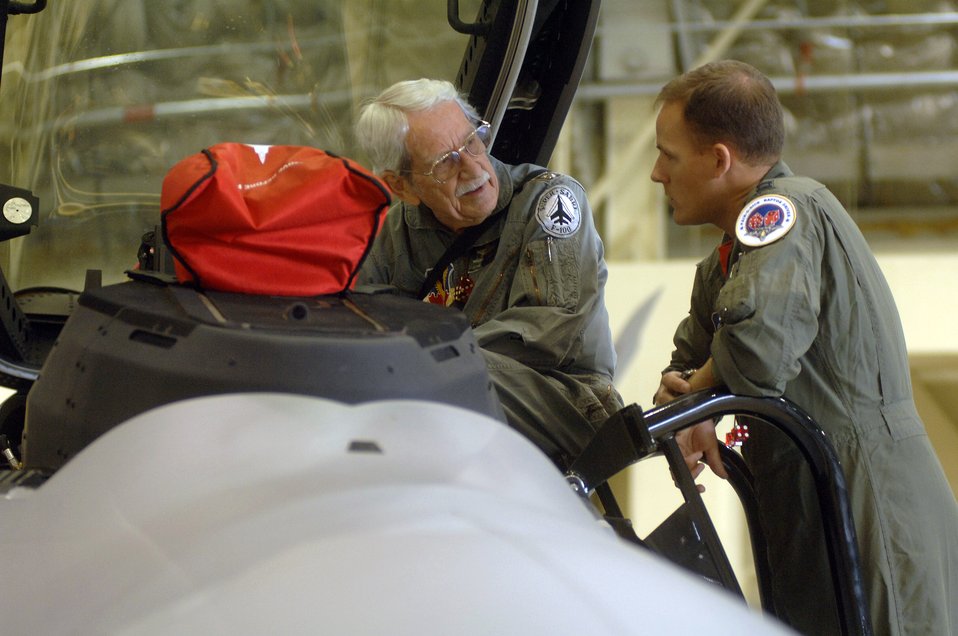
Air Force fighter squadron celebrates 90th

Capt. Brad Spears talks to retired Lt. Col. Bill Haynes about the capabilities of the F-22A Raptor Aug. 17 at Elmendorf Air Force Base, Alaska. Former and current 90th FS members celebrated the squadron's 90th anniversary Aug. 17-20. Colonel Haynes was commander of the 90th FS during the Vietnam War and Captain Spears is currently assigned to 90th FS.